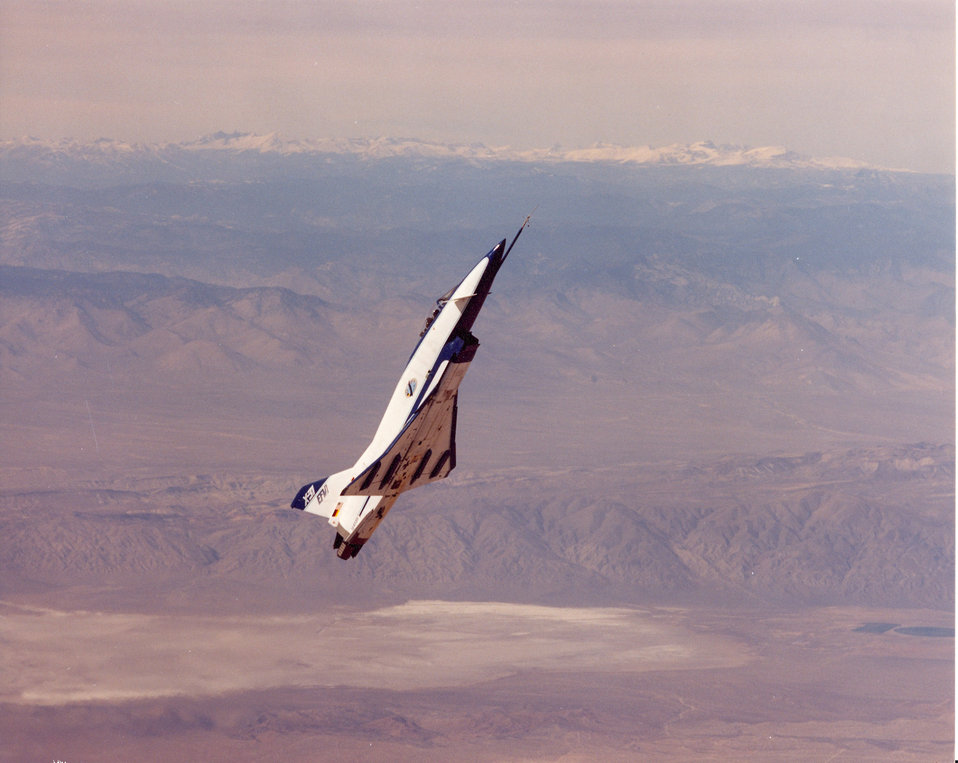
X-31

The X-31 in a controlled flight with a high angle of attack.